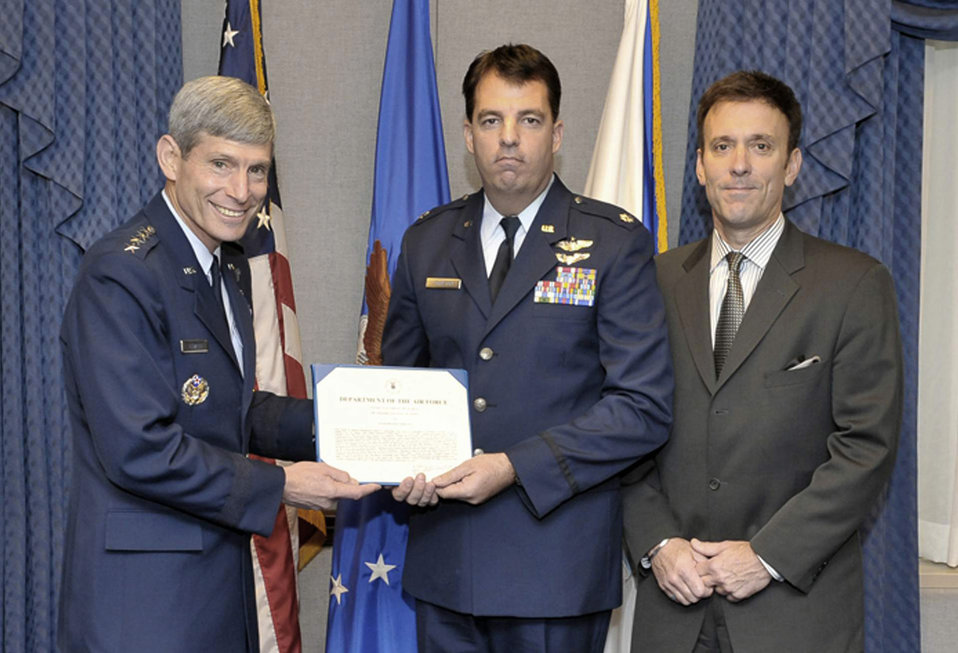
F-16 pilot receives Kolligian safety award

Air Force Chief of Staff Gen. Norton Schwartz assisted by Koren Kolligan presents Lt. Col. Booth M. Johnston with the Koren Kolligian Jr. Safety Award June 16. He received the award for an October 2007 incident in which he suffered a severe back and neck injury during a high-G maneuver. Despite the near total loss of use and lack of sensation in his hands and feet, Colonel Johnston was eventually able to level the aircraft and land at Ellington Field, Texas.